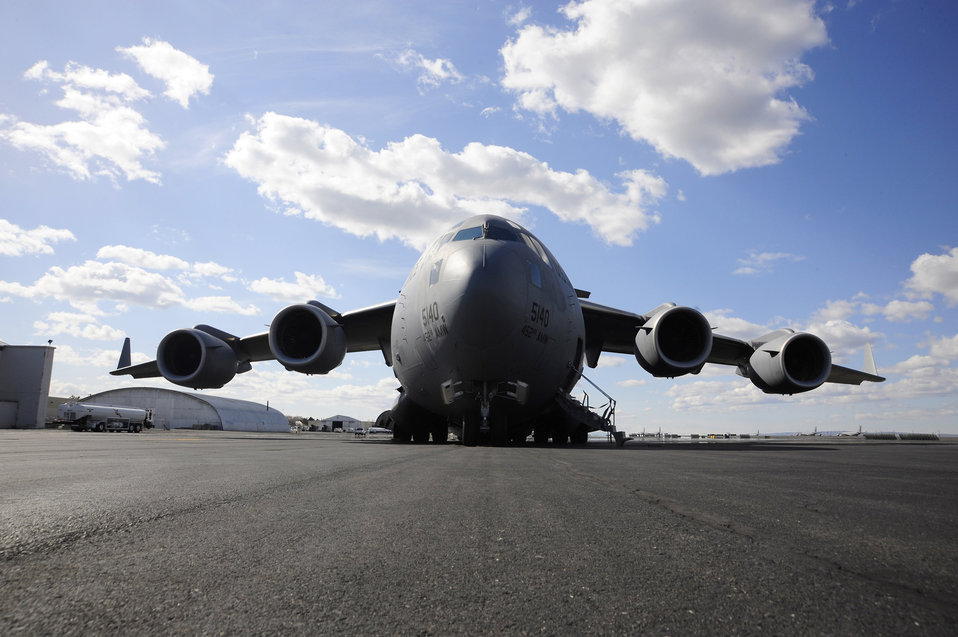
C-17 on a mission

A C-17 Globemaster III sits on the runway March 22, 2011, at Grant County International Airport in Moses Lake Wash., before a mission in support of Operation Odyssey Dawn.